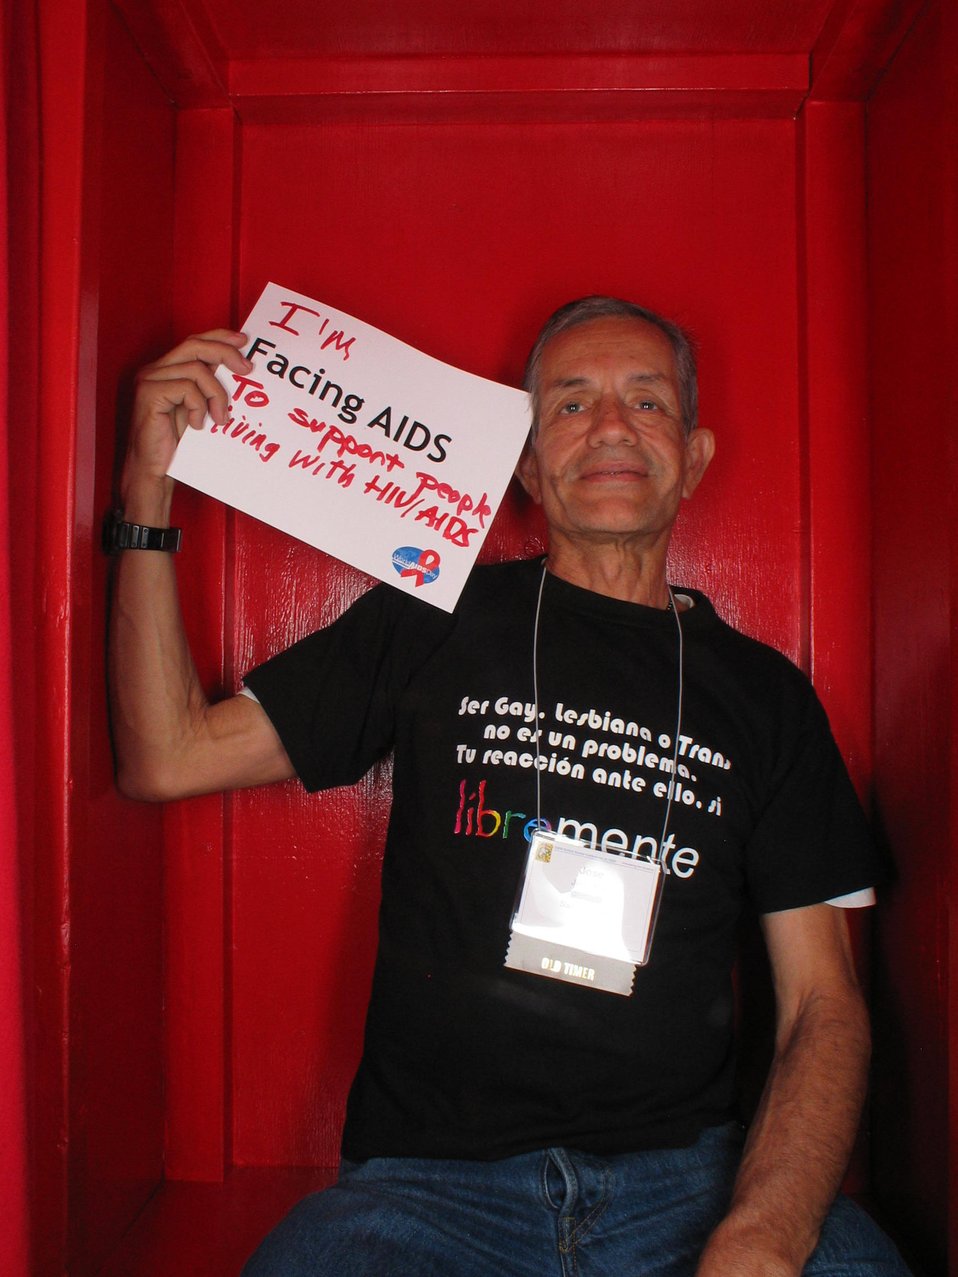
I'm Facing AIDS to support people living with HIV/AIDS